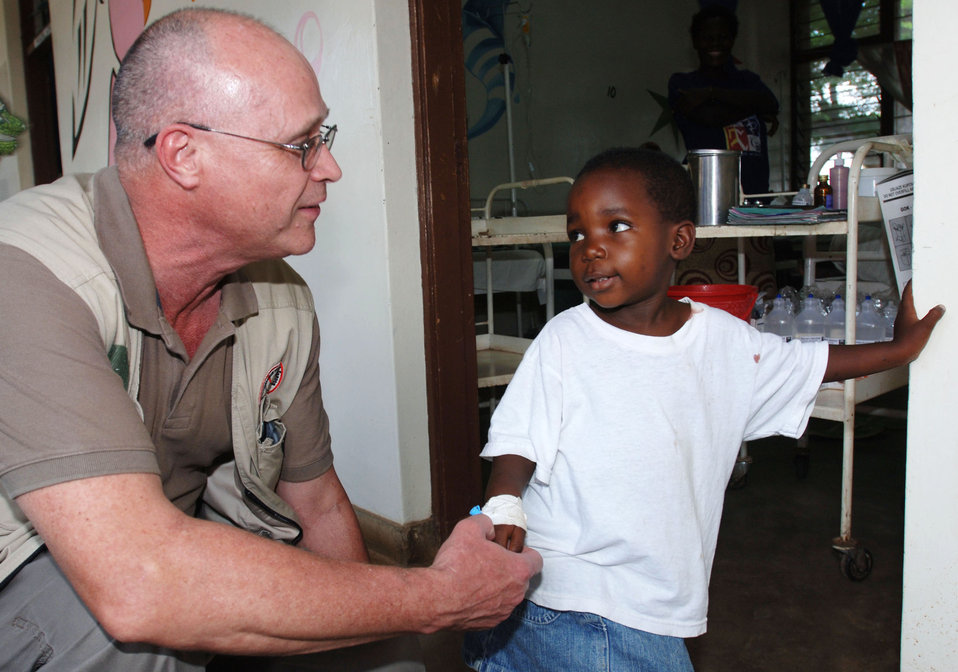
Military team works to prevent, treat deadly disease

Col. (Dr.) James Swaby greets a young patient in a Kisumu clinic during a trip he took as part of an infectious disease field diagnostic development initiative Jan. 7, 2010, to Kenya, Africa. Doctor Swaby is the 59th Medical Wing Clinical Research Division chief from Lackland Air Force Base, Texas.